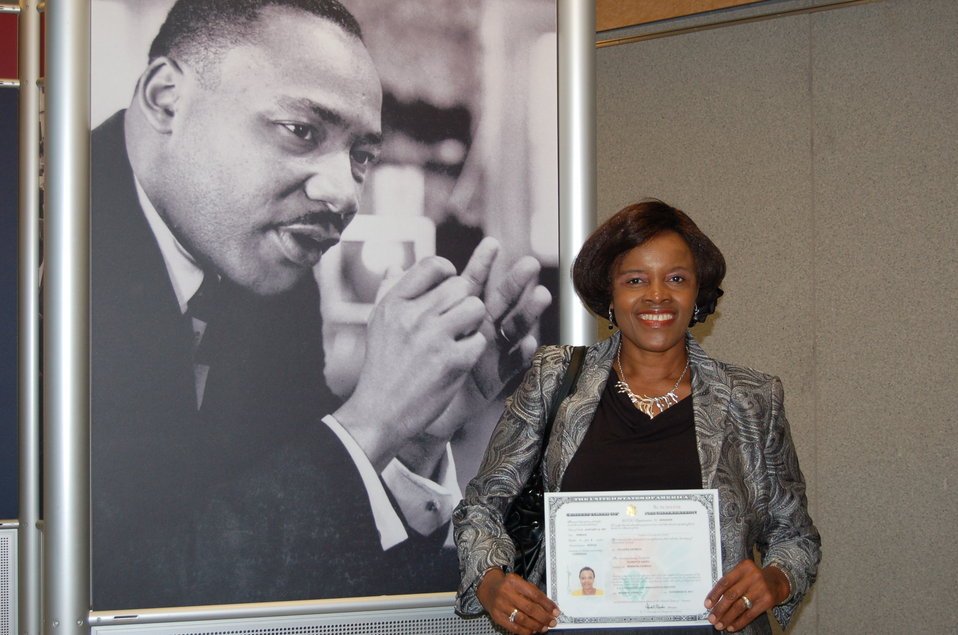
New Citizens